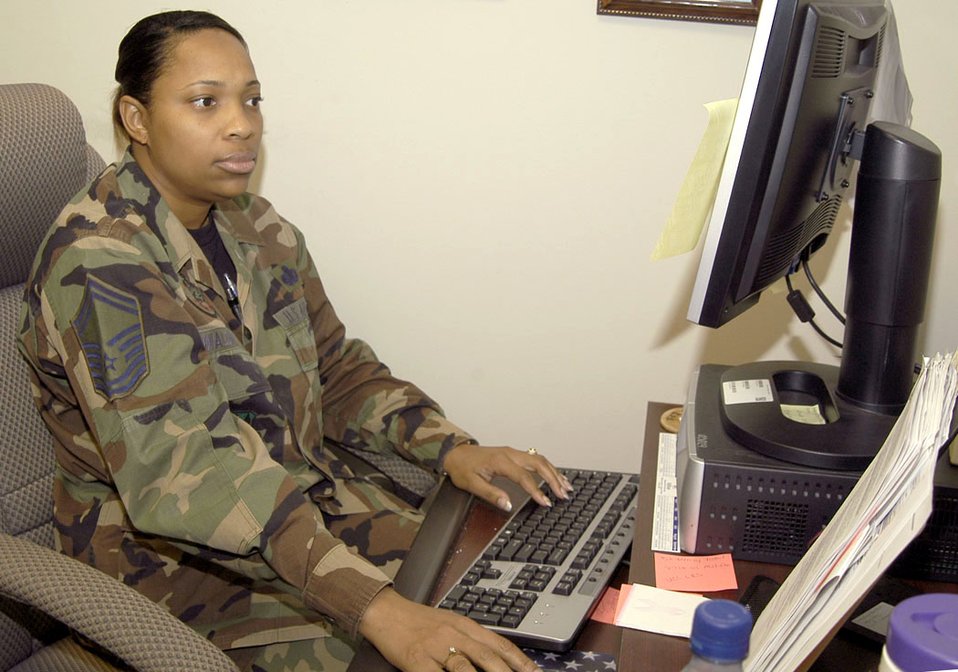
Hurricane Rita

ELLINGTON FIELD, Texas -- Senior Master Sgt. Priscilla Malone checks out lodging figures on her computer. She, along with other services Airmen, has been making sure everyone here is getting a hot meal and a comfortable place to stay. She is the 147th Services Flight superintendent.